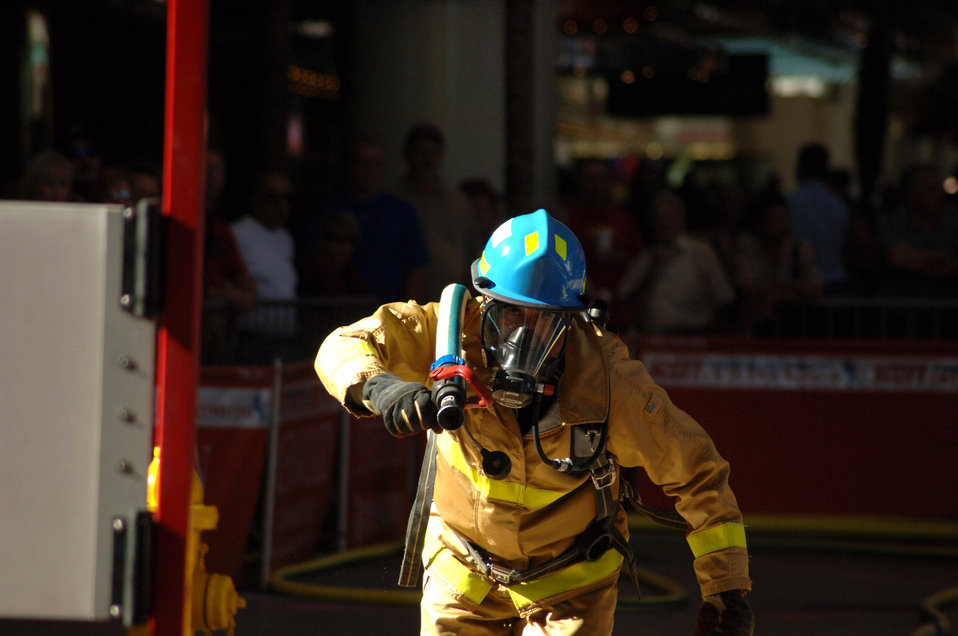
World Firefighter Combat Challenge

Air Force Academy firefighter Pat Kraft hauls a firehose over his shoulder to cross the 75 feet between him and where he needs to use the firehose to hit a volleyball-sized target during the World Firefighter Combat Challenge XVI in Las Vegas. The hose drag is the fourth of five events, which also include hauling a 42-pound firehose up five flights of stairs, using upper body strength to lift another 42-pound firehose up five stories via a rope, pounding a 160-pound sled weight five feet then running a 100-foot course, and finally dragging a 175-pound dummy backwards 106 feet. Mr. Kraft and his Academy teammates finished the events Nov. 5 in under two minutes, each.